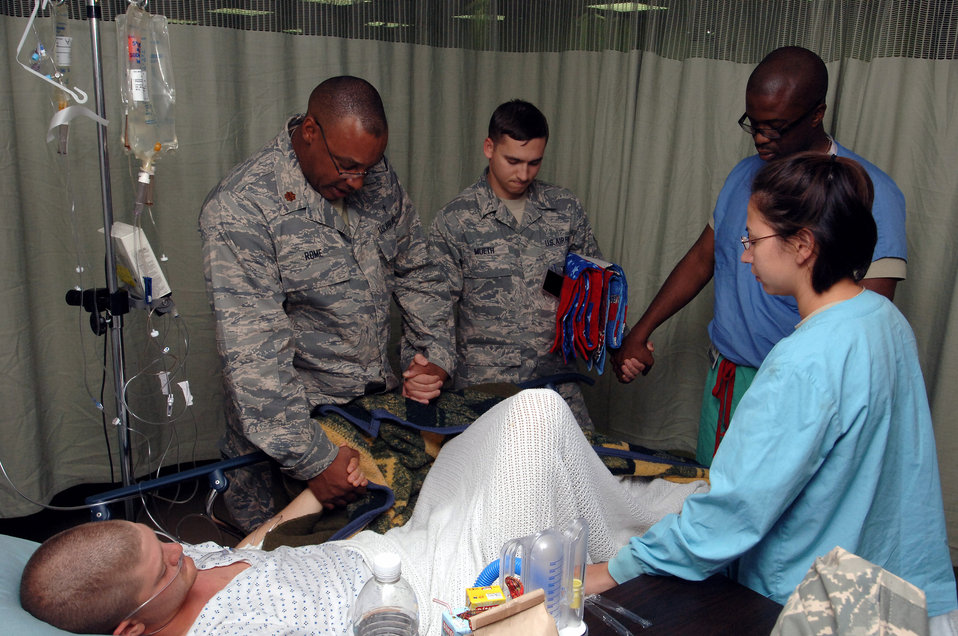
Religious support teams help heal invisible wounds

Chaplin (Maj.) Wendell Rome, Staff Sgt. Terry Mueth, Capt. Lawrence Onyejekwe and Capt. Anna Mann pray with Airman 1st Class Wyndal Boothe in the Air Force Theater Hospital Nov. 25 at Joint Base Balad, Iraq. Airman Boothe, a force protection augmentee with the 332nd Expeditionary Security Forces Squadron, received treatment for pneumonia. He is deployed from Charleston Air Force Base, S.C., where he is an aerospace maintenance apprentice. His hometown is Lubbock, Texas.